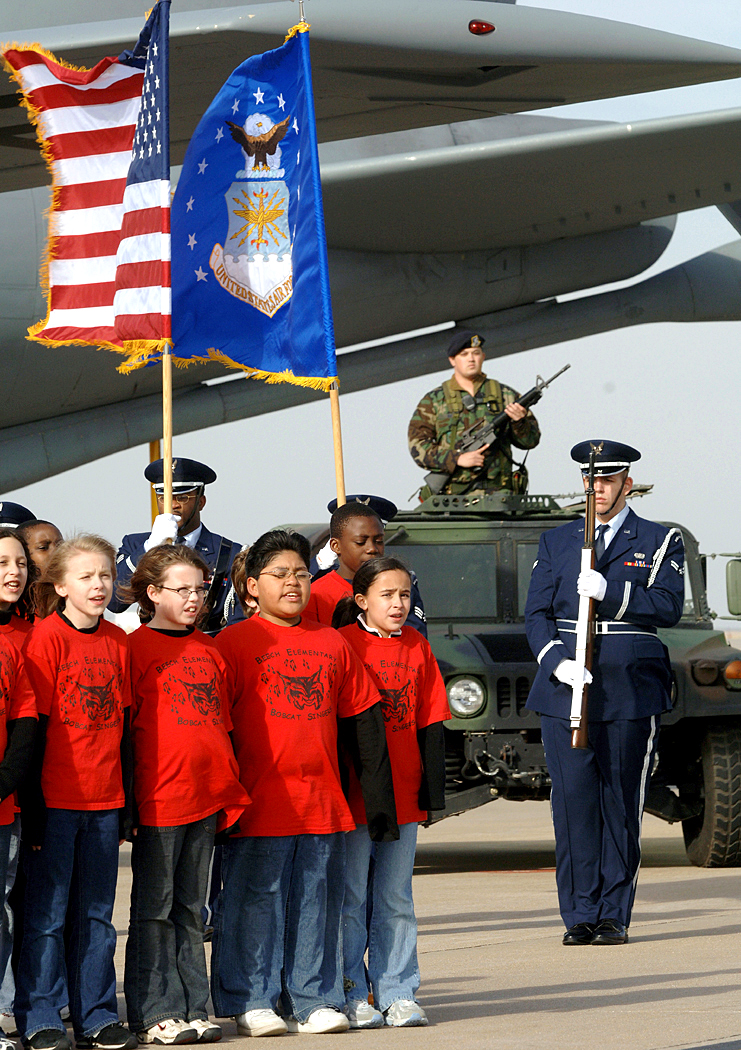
World's largest concert

MCCONNELL AIR FORCE BASE, Kan. (AFPN) -- Beech Elementary School students sing